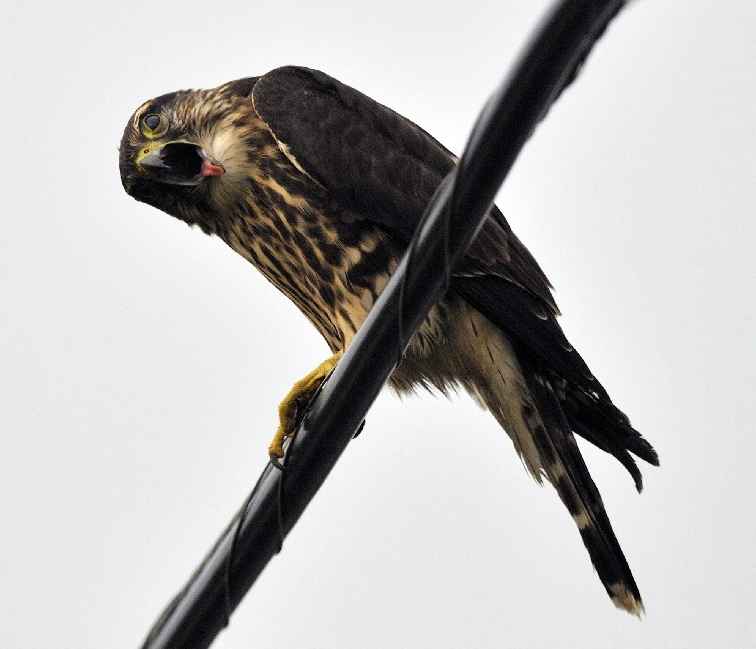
Photo of the Week - Merlin (ME)

Photo of the week - 9/19/2011

A merlin photographed near Kennebago Lake, ME.